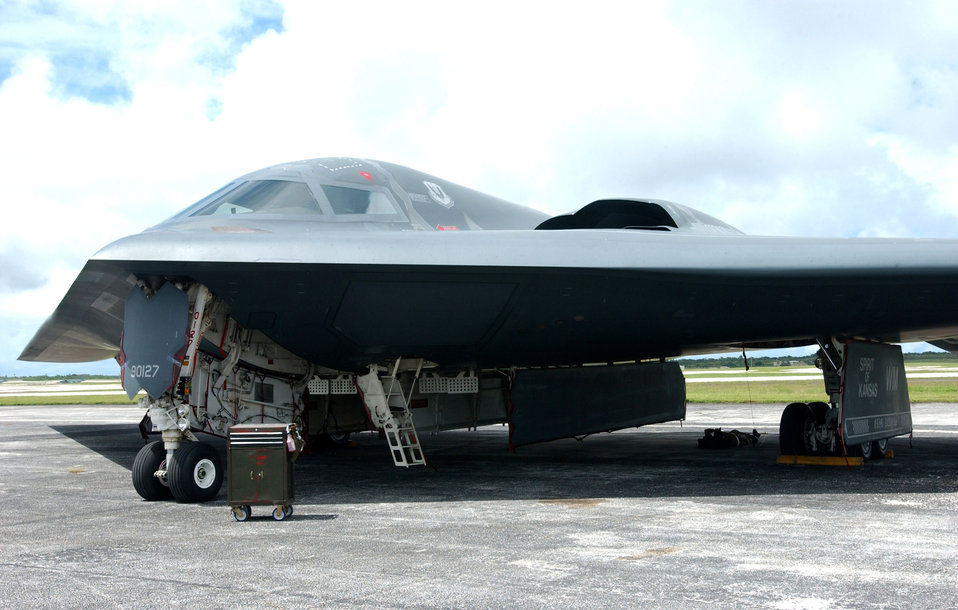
Whiteman B-2s deployed for Koa Lightning

A B-2 Spirit deployed from Whiteman Air Force Base, Mo., began flying operations Oct. 16 at Andersen AFB, Guam. The B-2 is a multi-mission capable, state-of-the-art platform equipped with low-observable stealth technology. The stealth bomber Airmen deployed here will be fully integrated with the rest of the 36th Wing to take full advantage of integrated training opportunities.